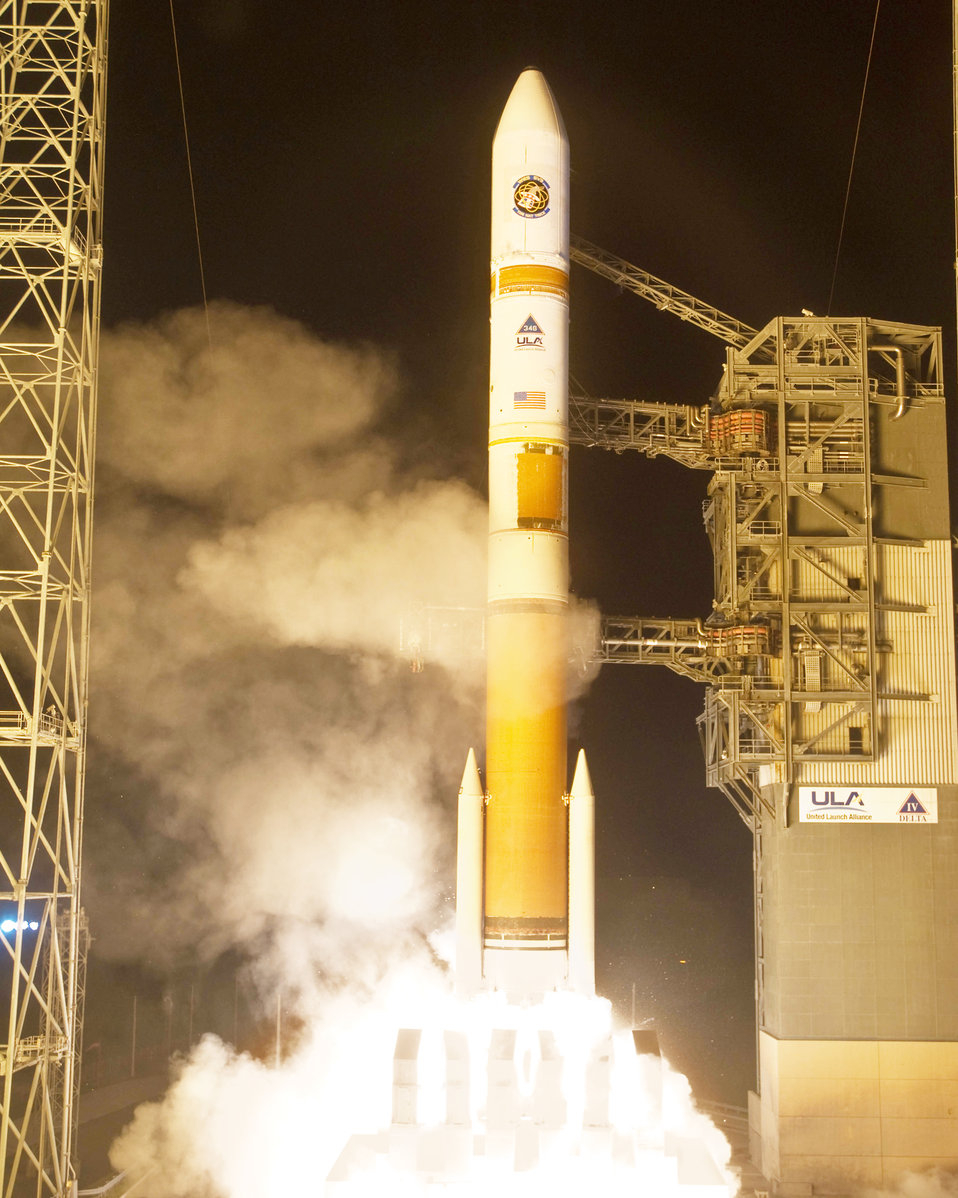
Air Force officials launch satellite to enhance military communications

A United Launch Alliance Delta IV rocket with the Air Force's Wideband Global SATCOM-3 satellite lifts off from its Space Launch Complex-37 launch pad at 8:47 p.m. EST Dec. 5 from Cape Canaveral Air Force Station, Fla.